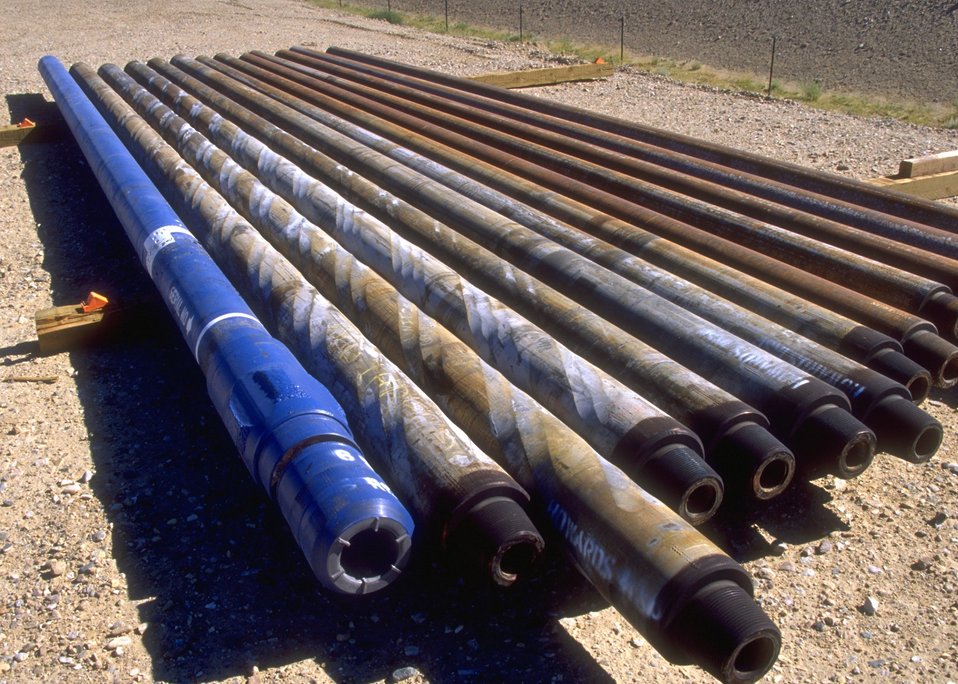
Pipe used on the Burlington Northern deep well drilling rig, Casper Field Office.